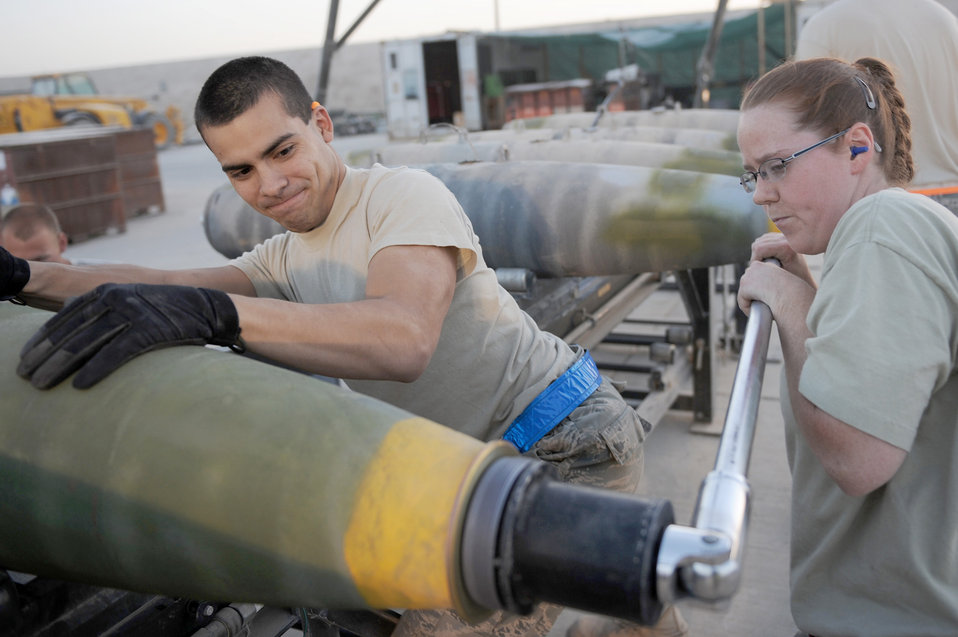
Ammo Airmen

Staff Sgt. Misty Lowe tightens the super bolt while Airman 1st Class Anthony Anderson holds the bomb in place Aug. 23 at Kandahar Airfield, Afghanistan. Sergeant Lowe and Airman Anderson are munitions systems specialists with the 451st Expeditionary Maintenance Squadron Munitions Flight.